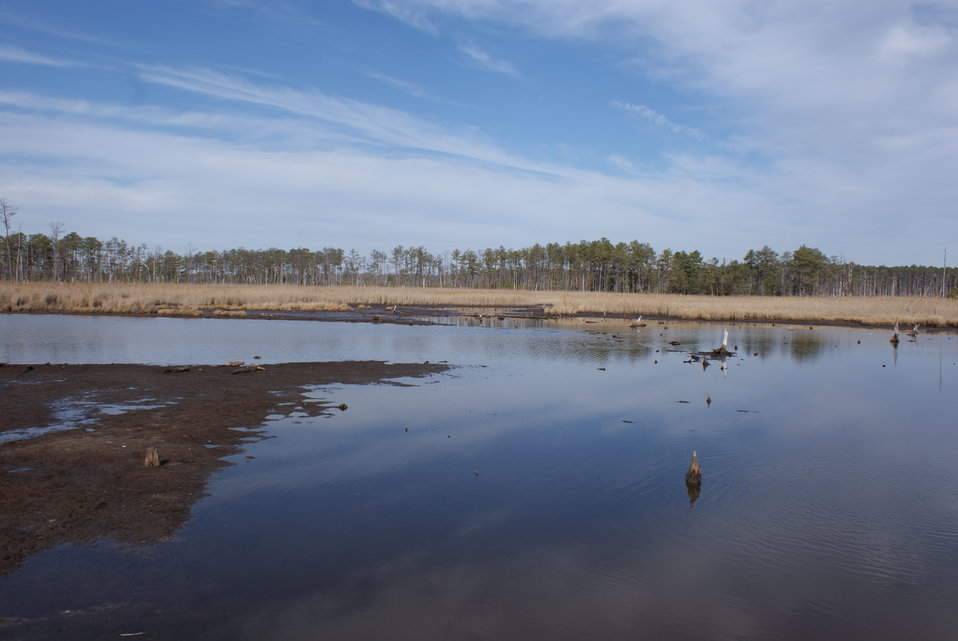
Blackwater National Wildlife Refuge

East side of the refuge.